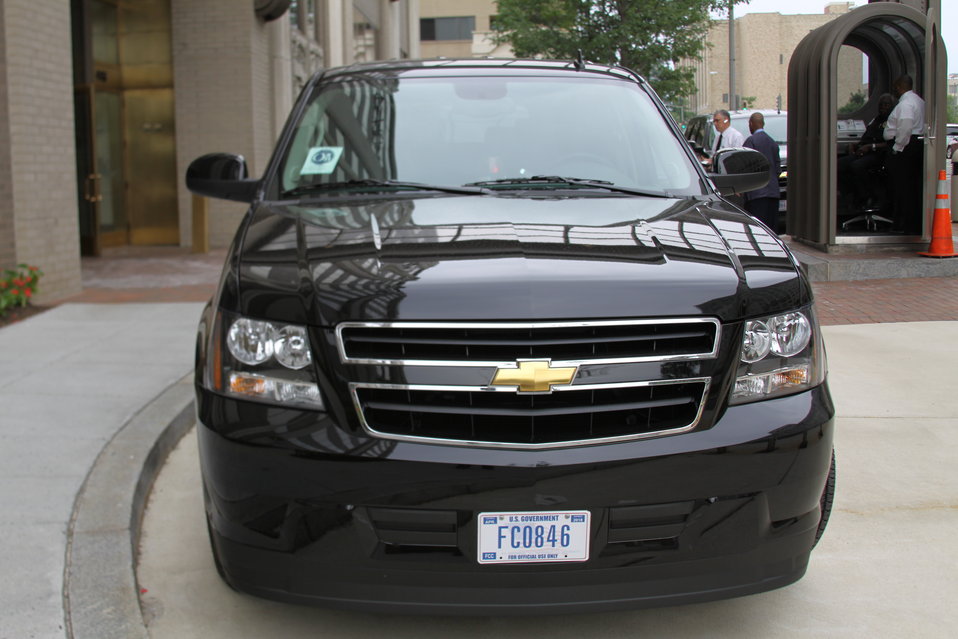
Tahoes 009